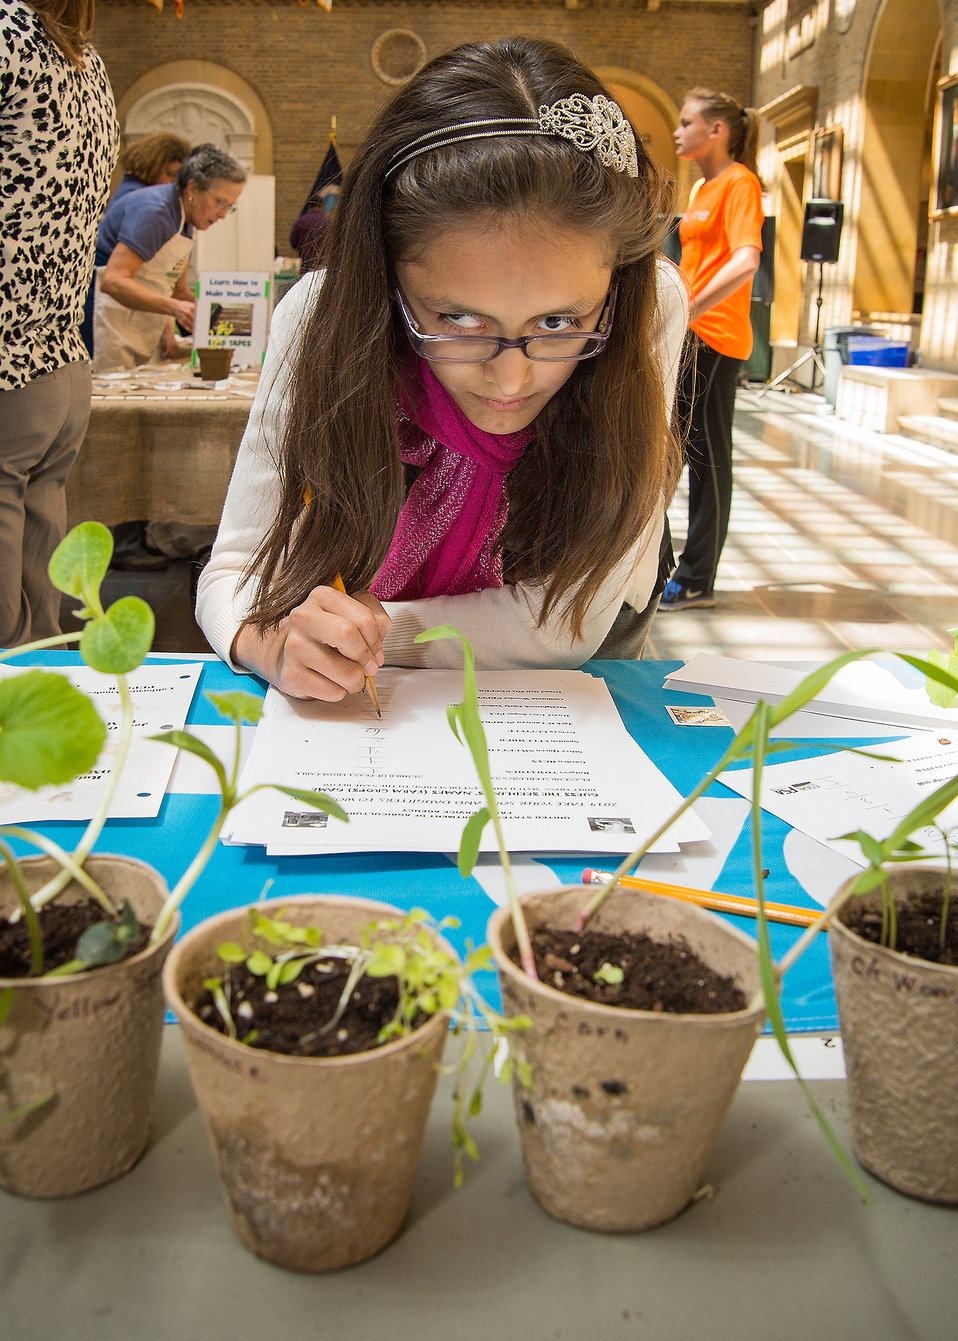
Ella Bauman matches plants to a list of vegetable crops on a sheet at the U.S. Department of Agriculture (USDA)Farm Service Agency (FSA) at USDA's “Bring Your Daughters and Sons to Work on Thursday, Apr. 24, 2014 in Washington, D.C. Ella’s mother Ana Alvarado-Bauman works for the USDA Federal Grain Inspection and Stockyards Agency (FGIS). The event offers employees the opportunity to bring their children to work to experience what they do in their profession and offer insight into other careers at the Department of Agriculture.